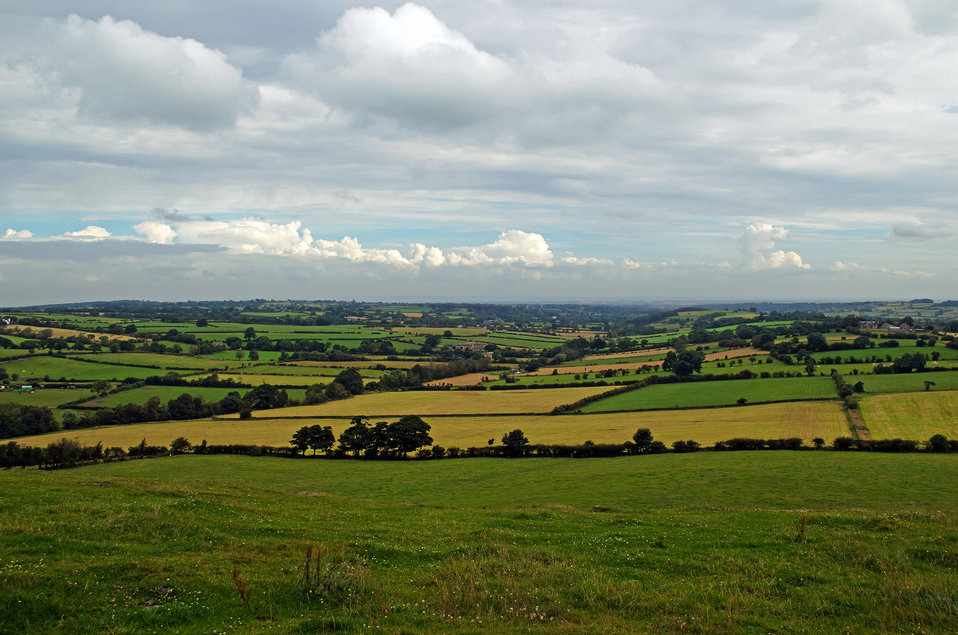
North yorkshire.